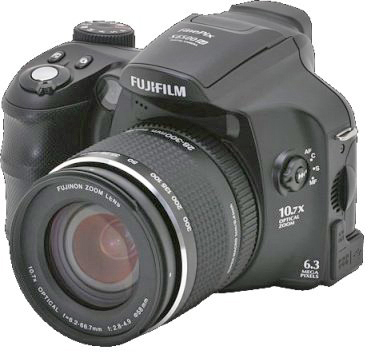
Fujifilm FinePix S6000fd/S6500fd camera